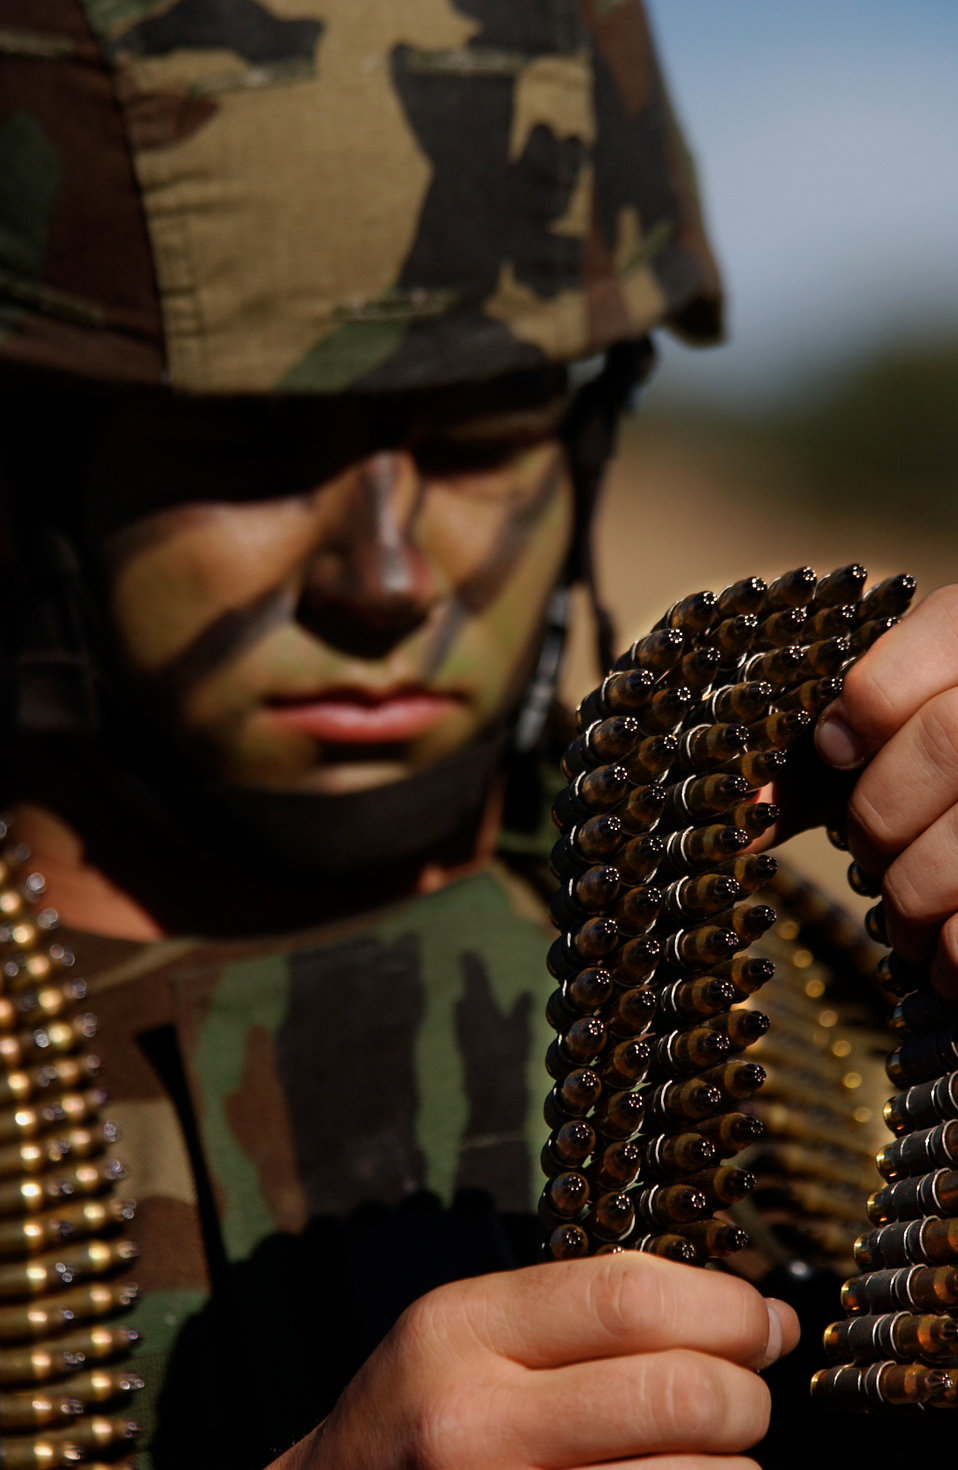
Loads of ammo

FORT HUACHUCA, Ariz. -- Senior Airman Chris Clawson loads ammunition for the M-249 automatic rifle prior to a tactics exercise here recently. Members of the U.S. Air Forces in Europe Defender Challenge team are spending three weeks here in preparation for the 2004 Defender Challenge competition. Defender Challenge, held at Lackland Air Force Base, Texas, is a security forces competition pitting competitors from major commands against one another. Airman Clawson is assigned to the 39th Security Forces Squadron at Incirlik Air Base, Turkey.